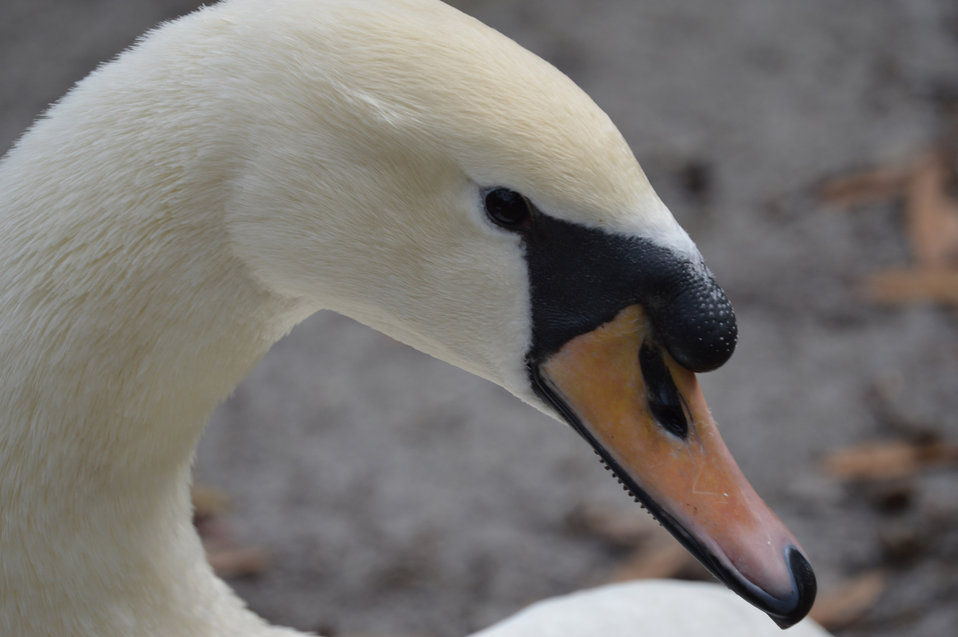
Swan face

Up close with a swan.